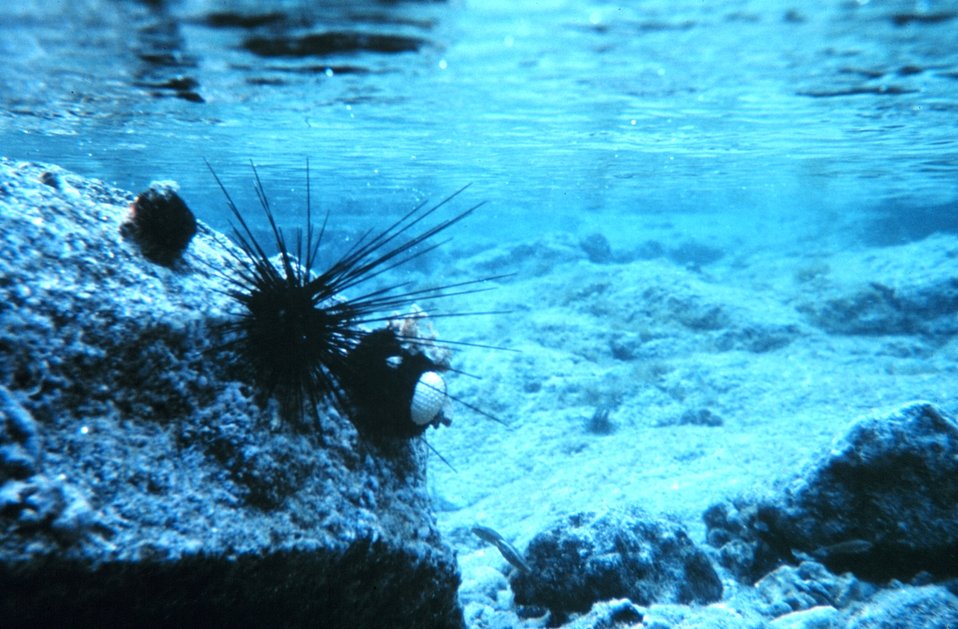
Diadema sp. is long-spined urchin and Trypneustes sp. is short-spined urchin. Trypneustes sp. on right has attached coral pieces and urchin shell. Possibly protection or camouflage.